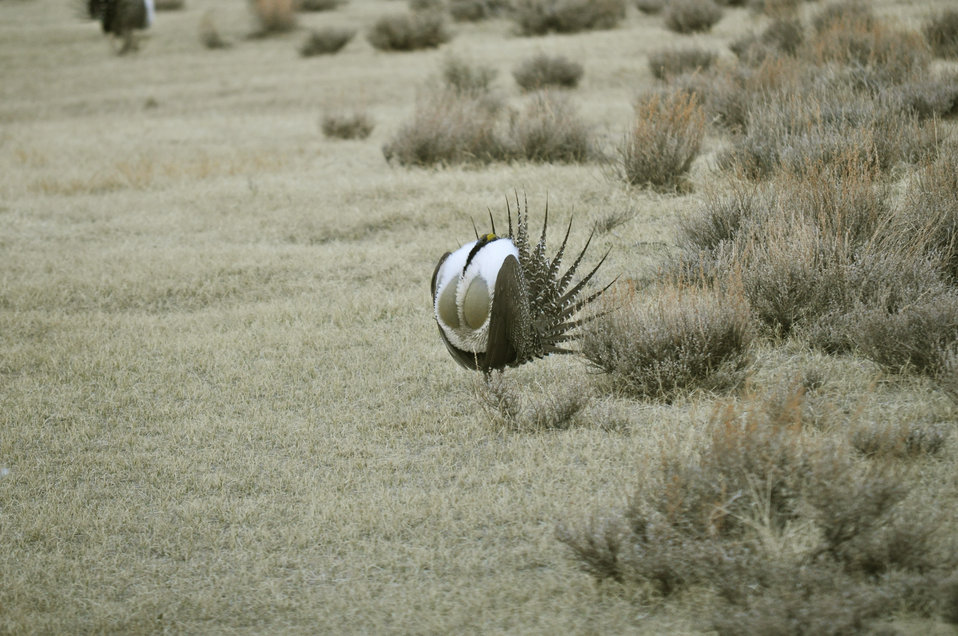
Male greater sage-grouse struts at lek (dancing or mating grounds) to attract females near Bodie, California.